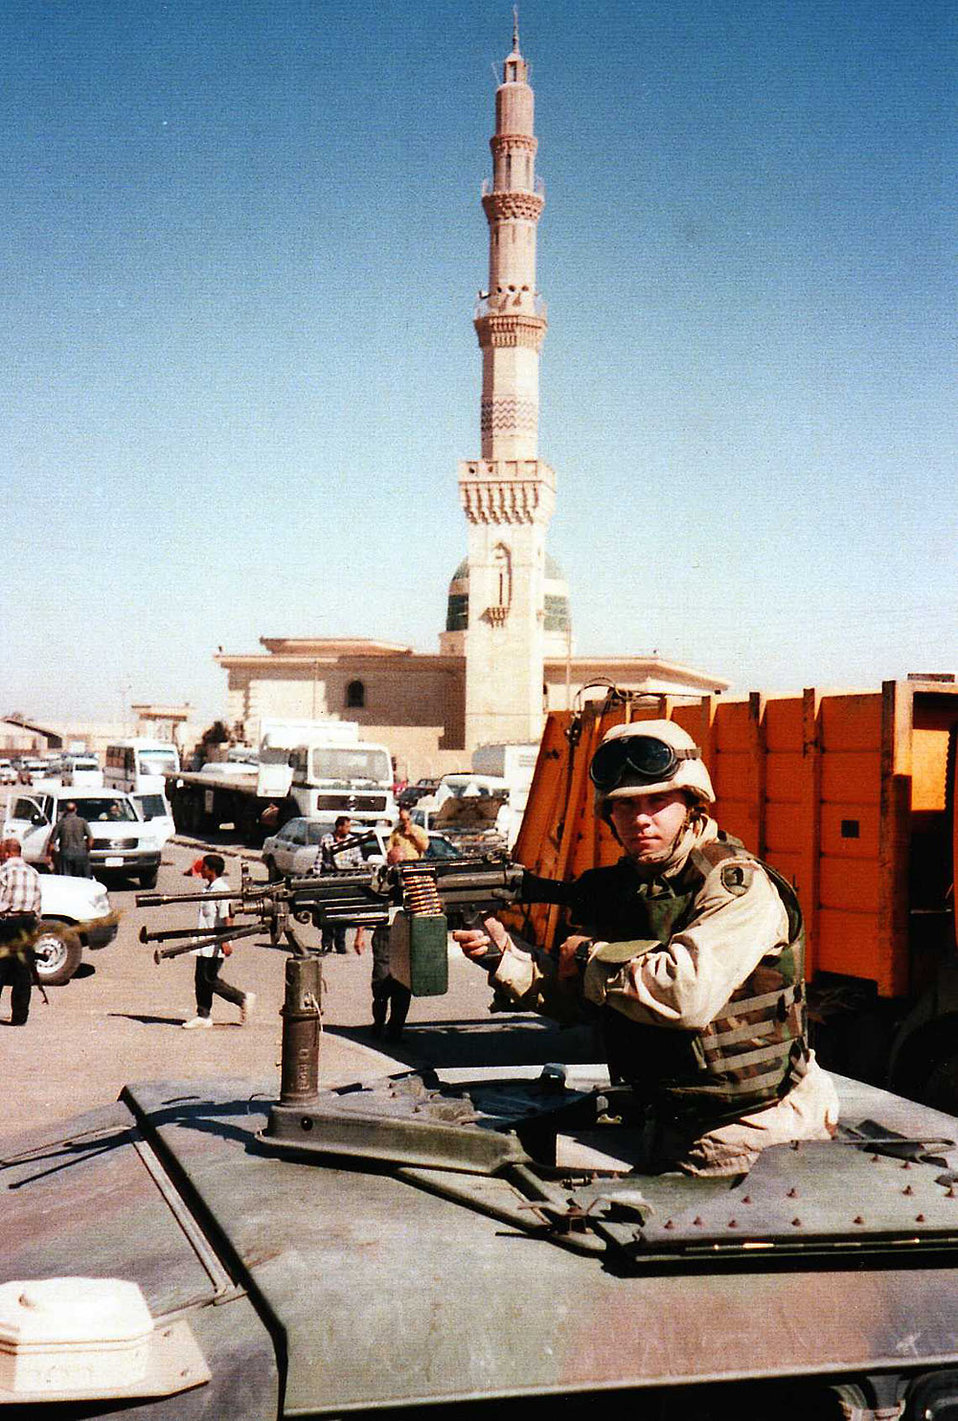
Jeremiah Smith-Midwest Region

Jeremiah Smith, a Biological Science Technician in the Columbia Fish & Wildlife Conservation Office, served with the Missouri Army National Guard for seven years under the 2175th Military Police Company. He was deployed to Iraq in 2003-2004 and reached the rank of Sergeant (E-5).